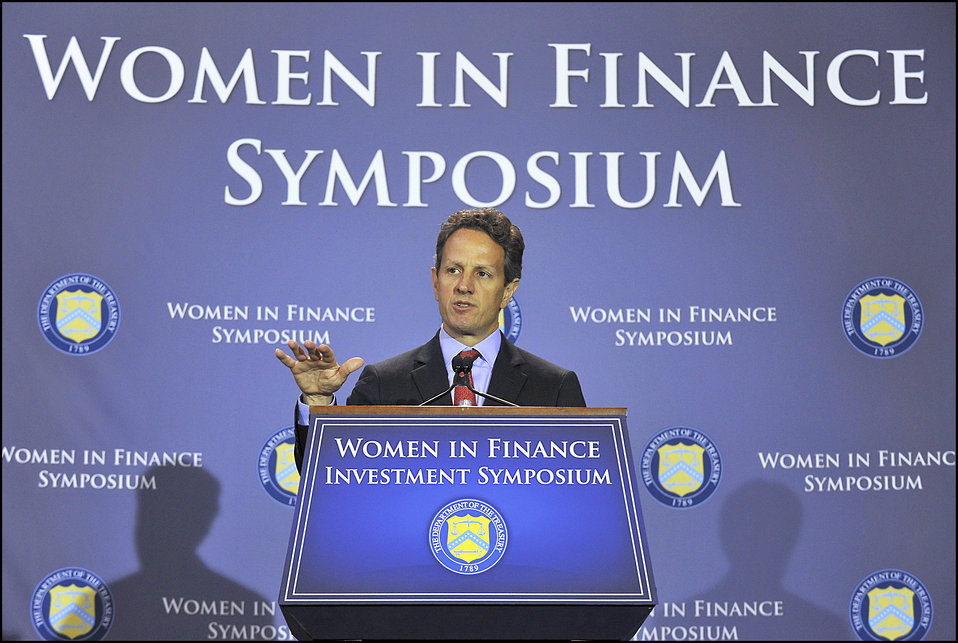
Women in Finance Investment Symposium

On Tuesday morning, Secretary Geithner delivered opening remarks at Treasury’s Women in Finance Symposium focusing on institutional investment. Following up on the first Women in Finance Symposium in March 2010 and Treasury’s Access to Capital Conference earlier this year, the symposium will bring together senior Administration officials, private sector leaders, and institutional investors for a series of panel discussions to recognize a new group of women who have risen to leadership roles in the institutional investment space and to explore the crucial role of the capital they invest in economic growth and sustainability, entrepreneurship, and job creation in America.